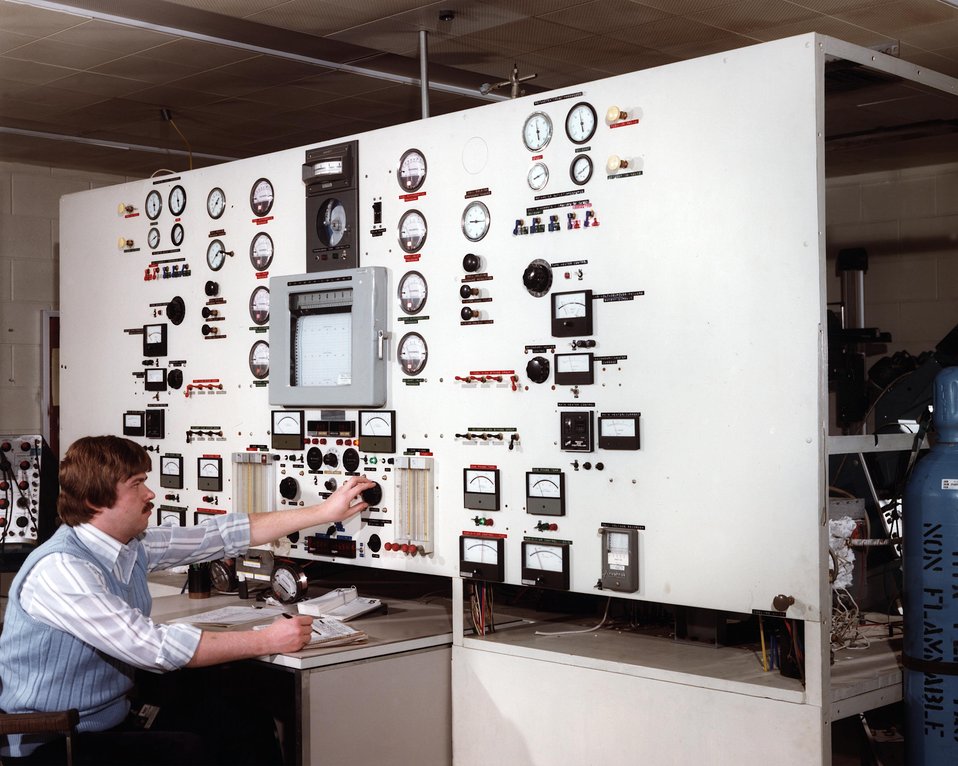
4' X 4' MOLTEN CARBONATE FUEL CELL TEST STAND.

THE FUEL CELL CONSISTS OF AN ELECTROLYTE BETWEEN AN ANODE AND A CATHODE. HYDROGEN-RICH FUEL IS FED DOWN THE ANODE SIDE WHERE THE HYDROGEN LOSES ITS ELECTRONS, LEAVING THE ANODE WITH A NEGATIVE CHARGE. AIR IS FED DOWN THE CATHODE SIDE, WHERE ITS OXYGEN PICKS UP ELECTRONS, LEAVING THE CATHODE WITH A POSITIVE CHARGE. THE EXCESS ELECTRONS AT THE ANODE FLOW TOWARDS THE CATHODE, CREATING ELECTRIC POWER. MEANWHILE, HYDROGEN IONS ARE PRODUCED AT THE ANODE (WHEN ELECTRONS ARE LOST) AND OXYGEN IONS FROM THE CATHODE MIGRATE TOGETHER IN THE ELECTROLYTE. WHEN THESEIONS COMBINE, THEY FORM WATER. HOWEVER, BECAUSE OF THE HEAT OF THE CELL PROCESSES, THE WATER LEAVES THE CELL AS STEAM WHICH IS ONE OF THE FEW WASTE PRODUCTS OF THIS PROCESS. IN THIS PHOTO, MR. RON TERRELL TESTS PROMISING FUEL CELL DE- SIGNS FOR LONG-TERM CHARACTERISTICS WITH VARIOUS GAS FUELS.